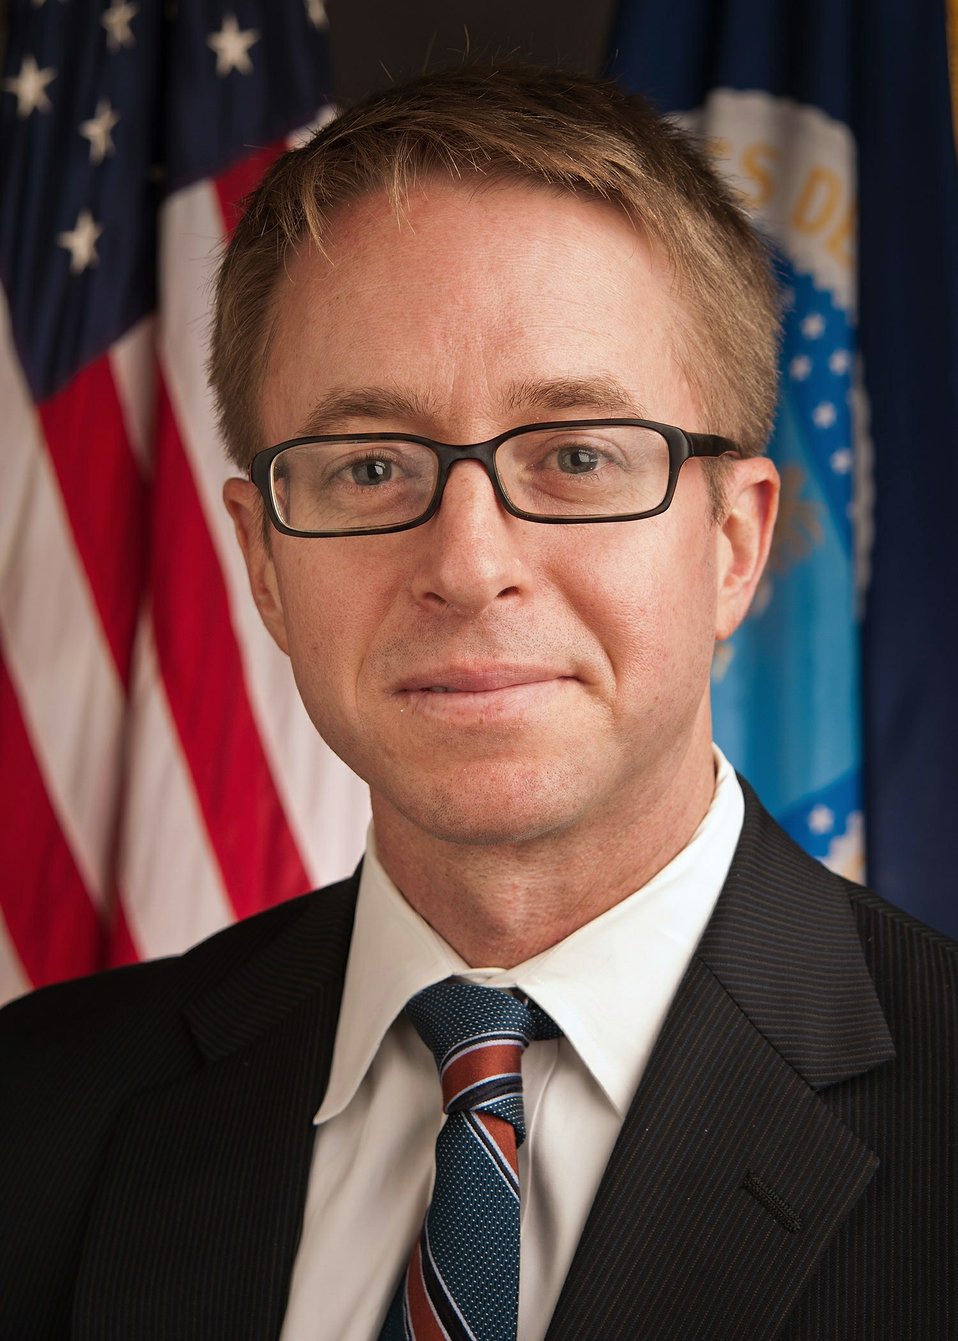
20121204-NRCS-RBN-2333 Chief, Natural Resources Conservation Service Jason Weller

U.S. Department of Agriculture (USDA) Natural Resources Conservation Service (NRCS) Chief Jason Weller.